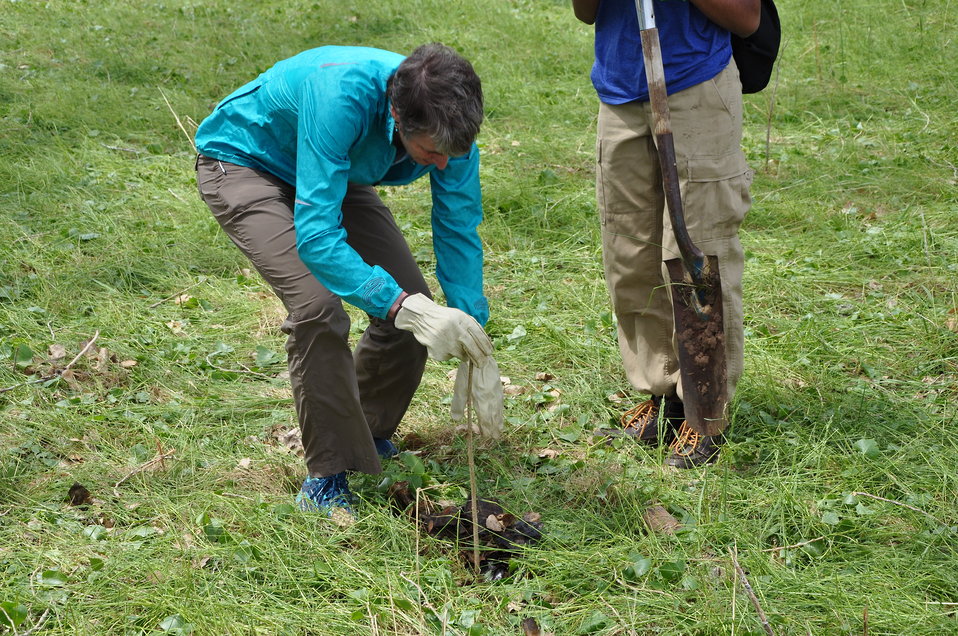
Secretary Jewell Planting a Cottonwood Tree